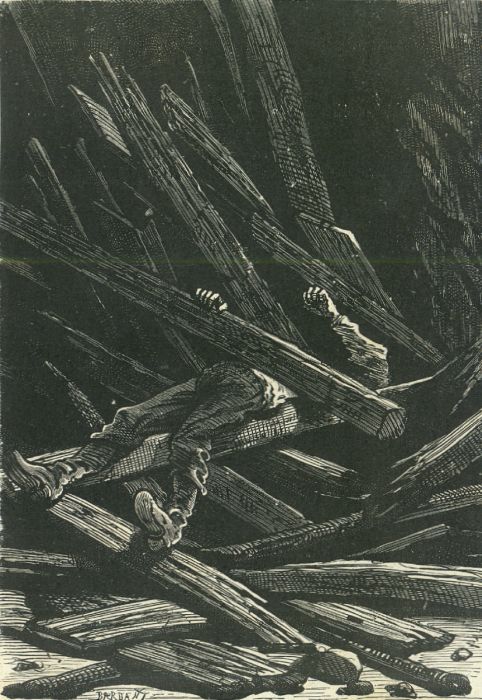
An illustration from the novel 'The Child of the Cavern' (alternative English titles for this novel include: Black Diamonds, Black Indies, Child of the Cavern, or Strange Doings Underground and The Underground City) by Jules Verne drawn by Jules Férat. Polski: Ilustracja powieści Juliusza Verne'a 'Czarne Indie' autorstwa Julesa Férata. Français : 'Les Indes noires', Jules Férat. Orginal description from the book: Français : Harry fut enseveli sous les décombres.